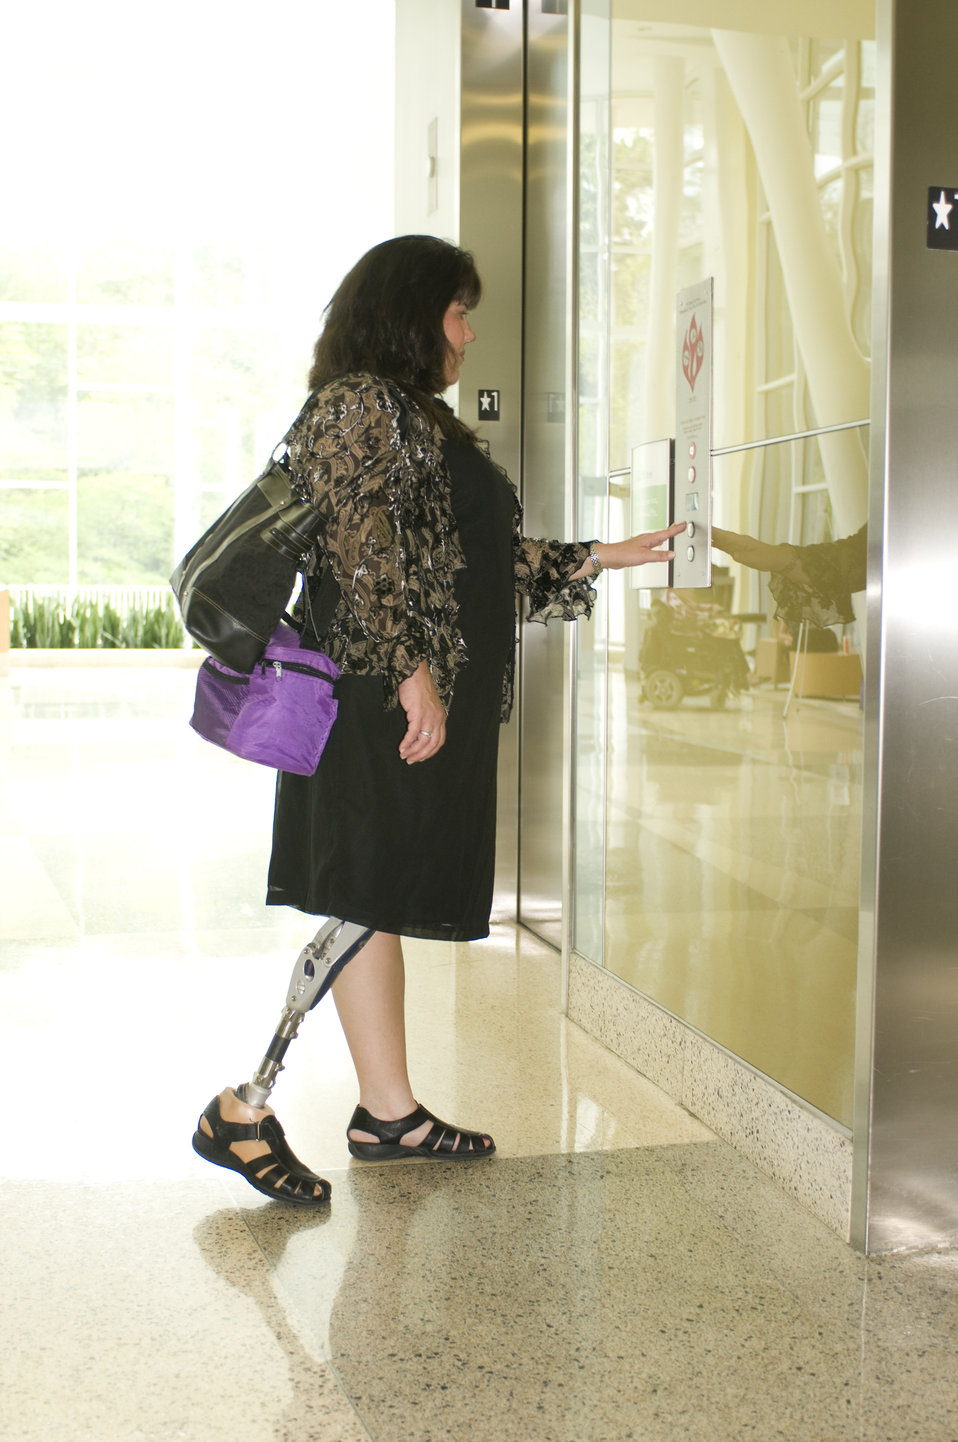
The woman pictured here was equipped with a right lower limb prosthesis, and having entered one of the Centers for Disease Control and Prevention's (CDC) campus buildings, was in the process of boarding the building's elevator, pressing the appropriate button, which would carry her to her desired destination.